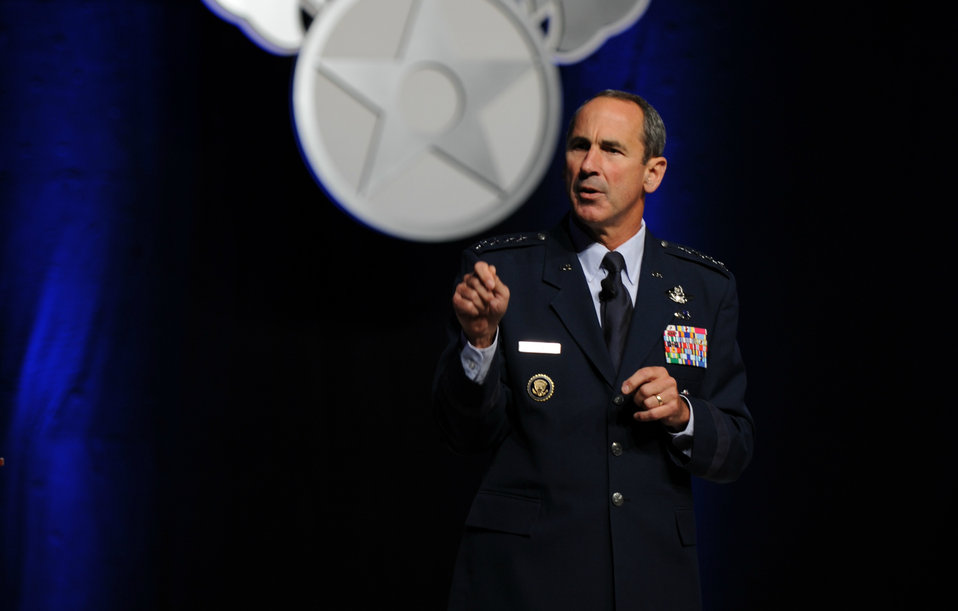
Mobility Air Forces provide wartime capability, humanitarian assistance

Gen. Ray Johns speaks about a variety of Air Force mobility missions Sept. 19, 2011, at the Air Force Association's 2011 Air & Space Conference and Technology Exposition in National Harbor, Md. Johns highlighted the mobilization of equipment and mobility Airmen “answering the call” for humanitarian and wartime missions. Johns is the Air Mobility Command commander.